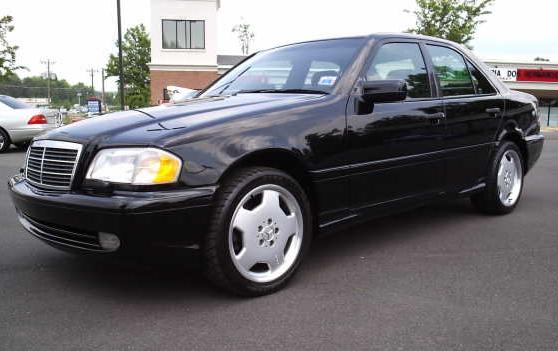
1999 Mercedes-Benz C43 AMG Photographed in Rochester, NY.